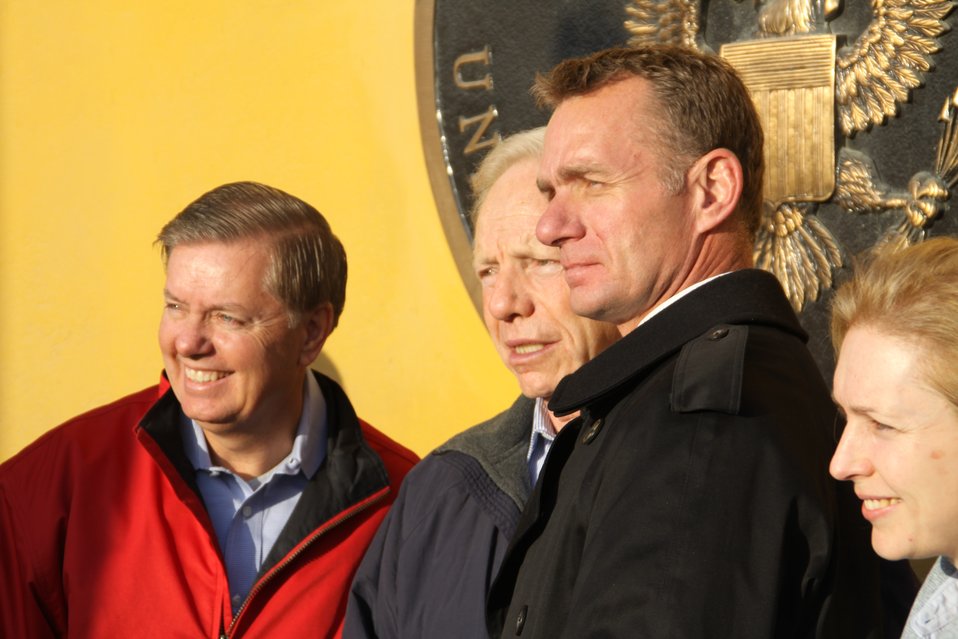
Senators Graham, Lieberman, and Gillibrand